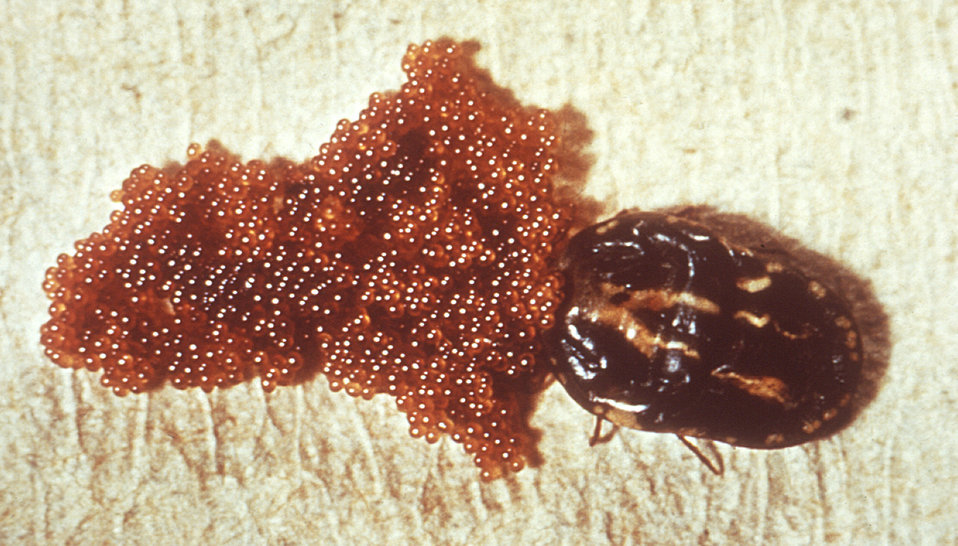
After laying her eggs, this female Ixodes hard tick will die, while the soft tick female will lay many batches of eggs.